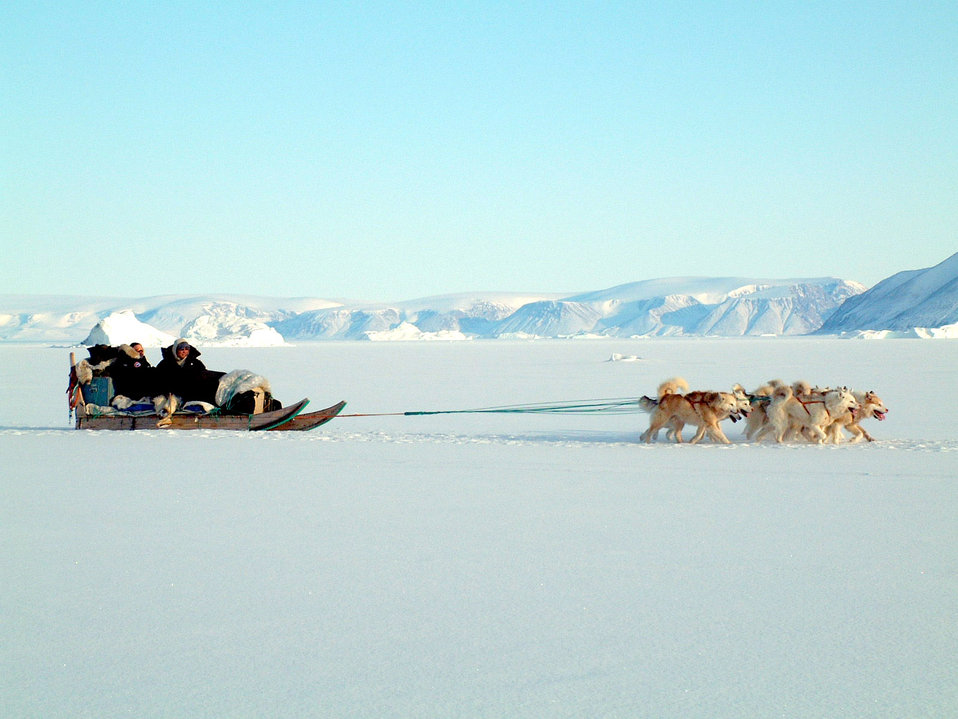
Three Airmen participate in dog-sled expedition

GREENLAND -- First Lt. Lance Brenneke (left) and Otto begin a six-day dog-sledding expedition to northwest Greenland. Otto is a Greenlandic hunter, and Lieutenant Brenneke is assigned to the 821st Support Squadron at Thule Air Force Base, Greenland.